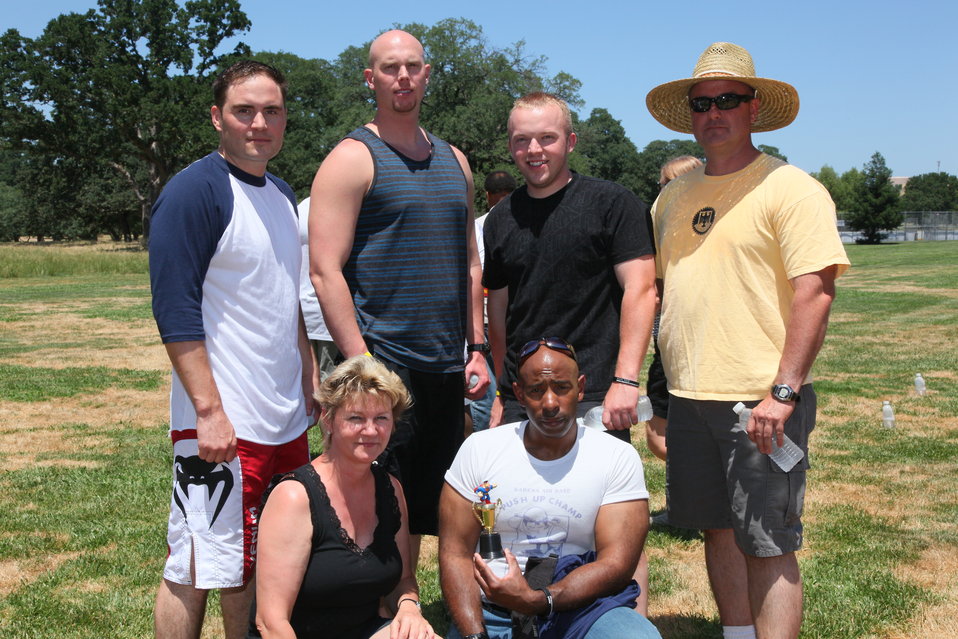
2011 Annual Picnic